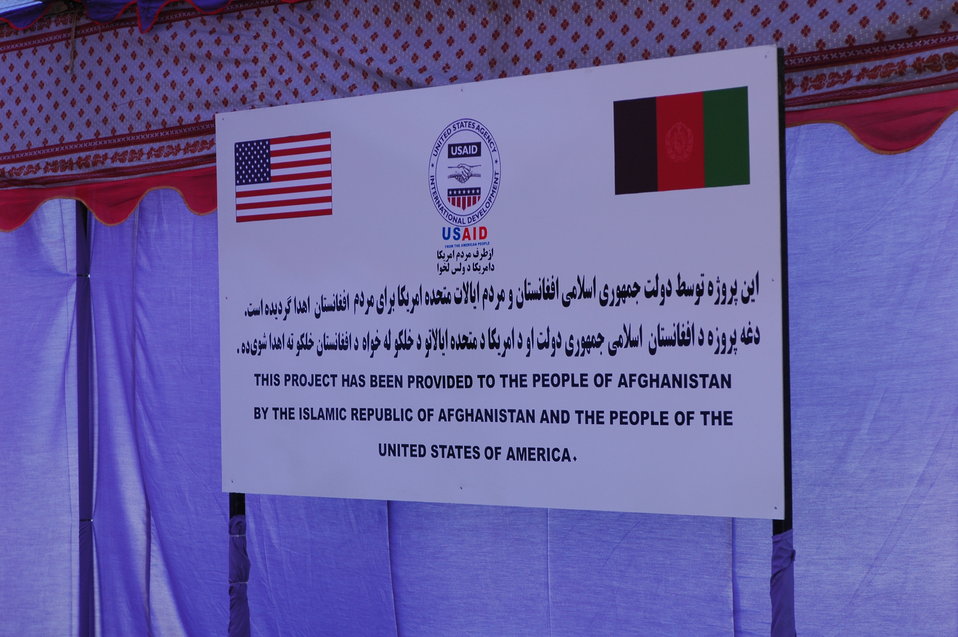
105 MW Tarakhil Power Plant Handover